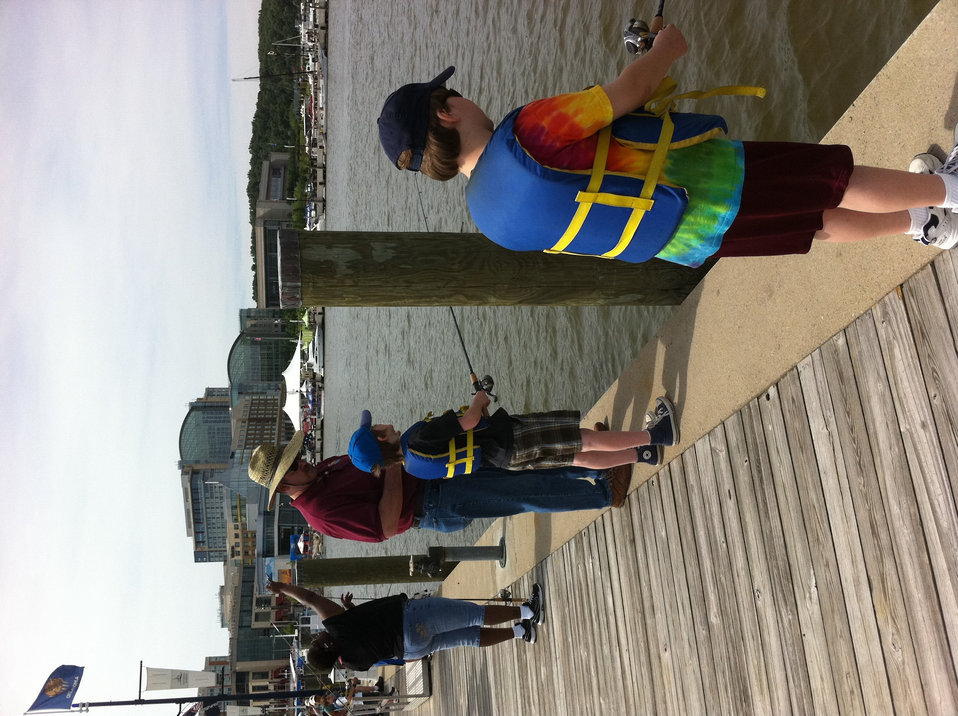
Fishing on the pier.